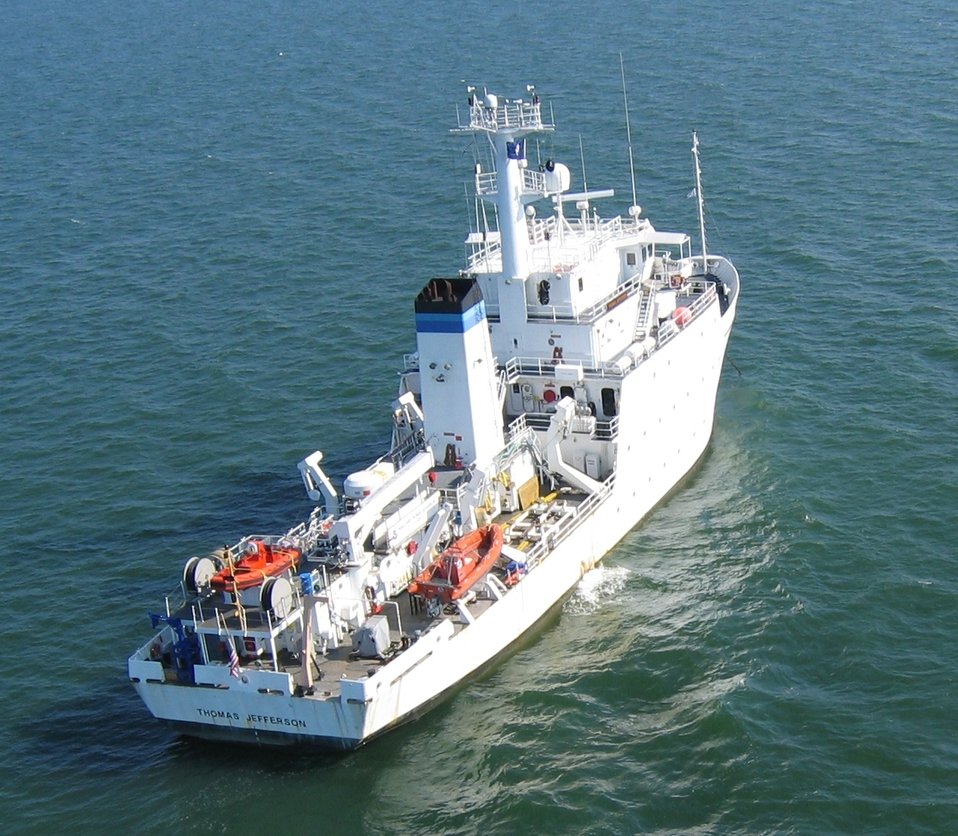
The NOAA Ship THOMAS JEFFERSON surveying approaches to harbors and the interior of harbors for obstructions. NOAA also sent hydrographic field parties to the stricken area and had resurveyed and cleared harbors in the area for ship traffic within three weeks of Hurricane Katrina.